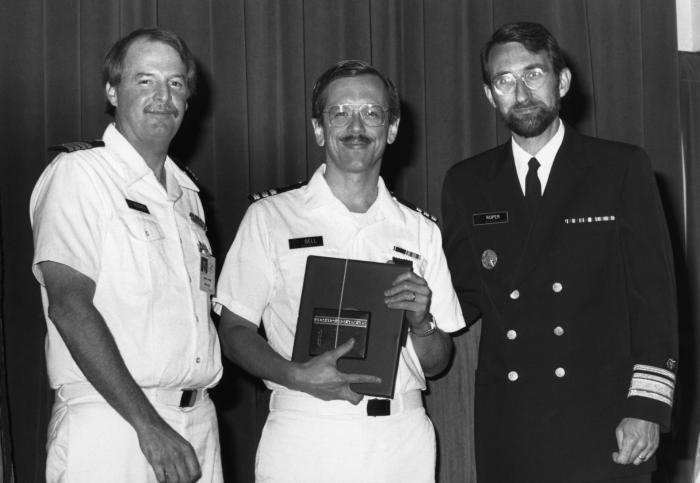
This photograph shows Dr. James Hughes (left), head of the Centers for Disease Control's National Center for Infectious Diseases (NCID), and Dr. William L. Roper (right), former Director of the CDC (1990 - 1993), presenting a 1993 CDC Achievement Award to Dr. David M. Bell, (center) who at the time was Chief of the HIV Information Branch.